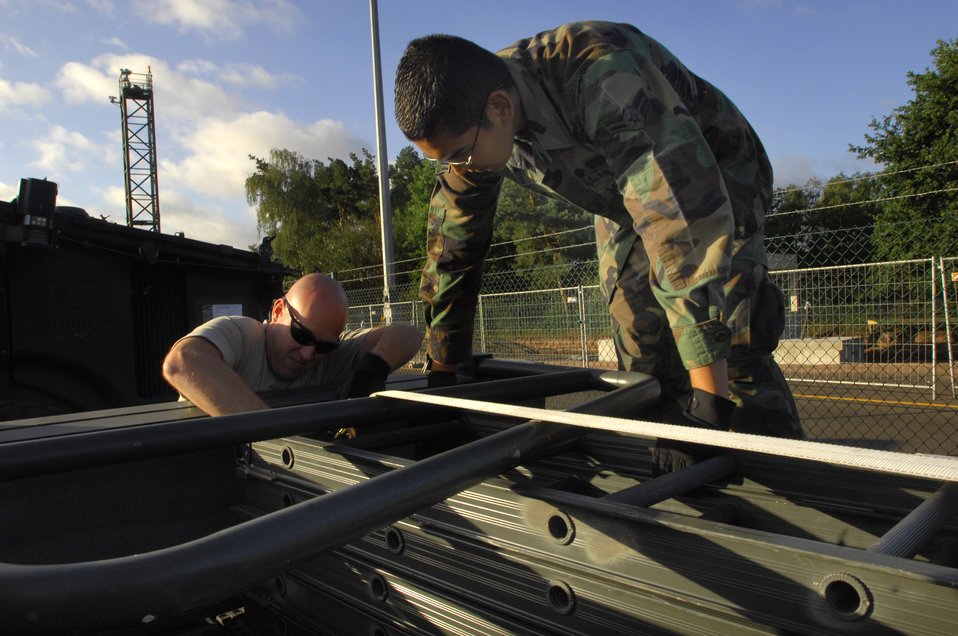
435th Logistics Readiness Squadron prepares for Georgia

Tech. Sgt. Warren Parson and Airman 1st Class Rogelio Munoz prepares cargo heading to the country of Georgia Aug. 13 at Ramstein Air Base, Germany. Sergeant Parson and Airman Munoz are assigned to the 435th Logistics Readiness Squadron.